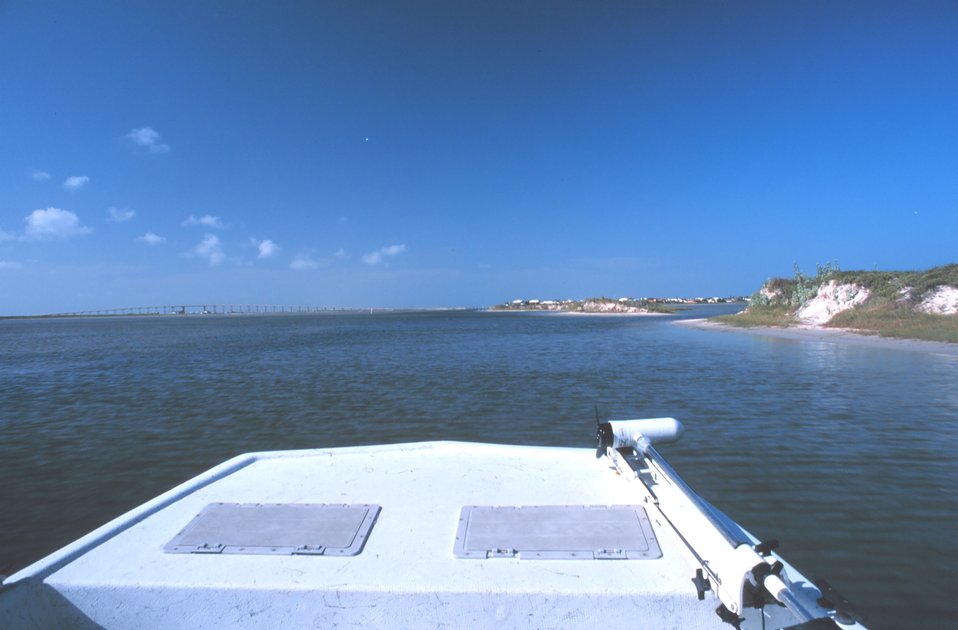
Vegetation-covered dunes on the west side of Padre Island